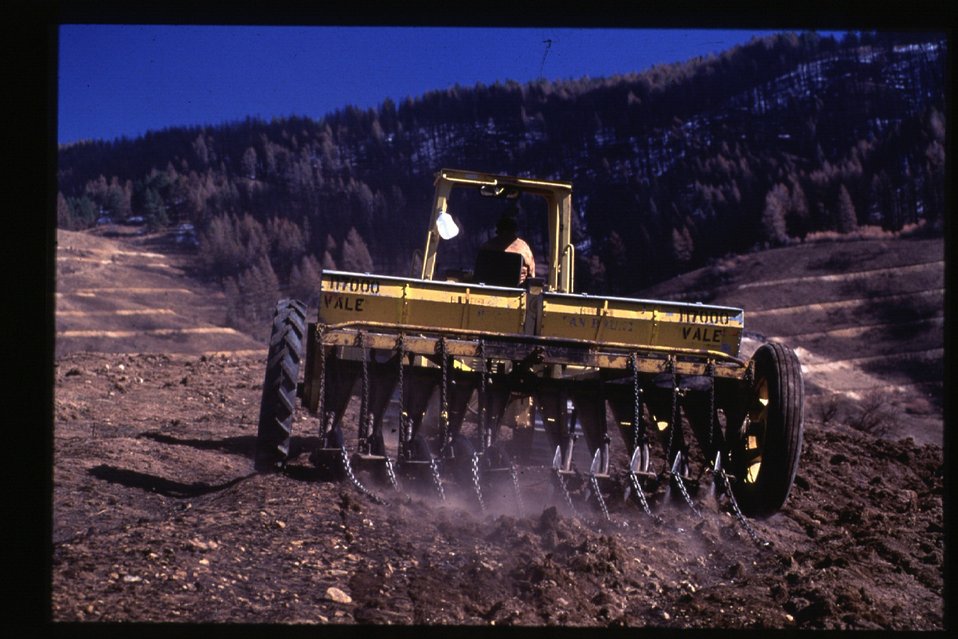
Fire 8th Street Fire Rehab Drill Seeding Four Rivers Field Office LSRD Lower Snake River District